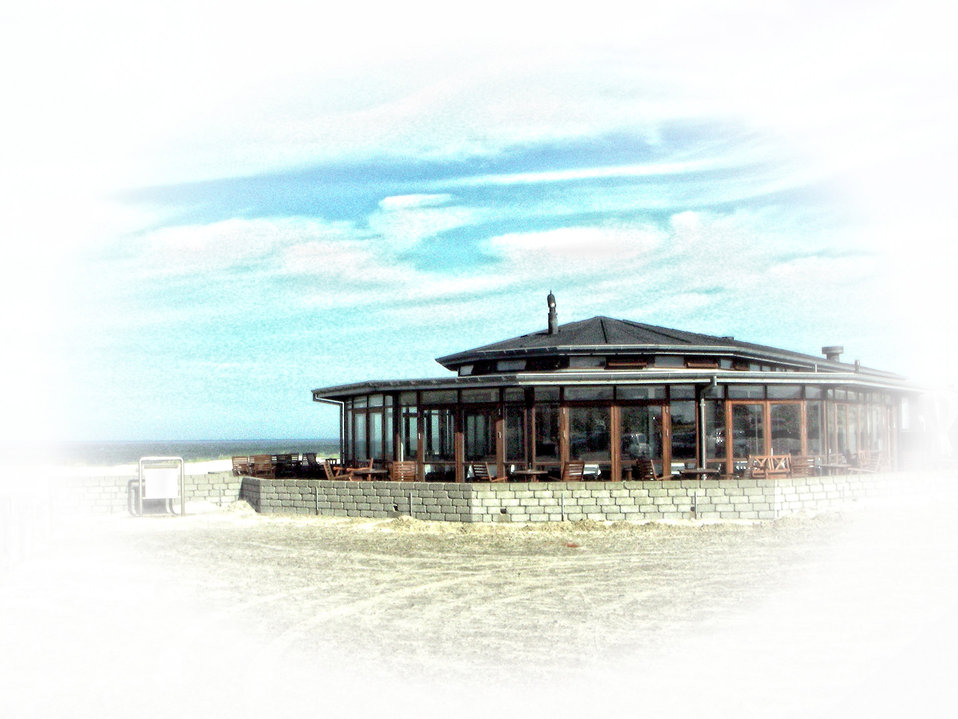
Beach cafe henne beach, denmark.